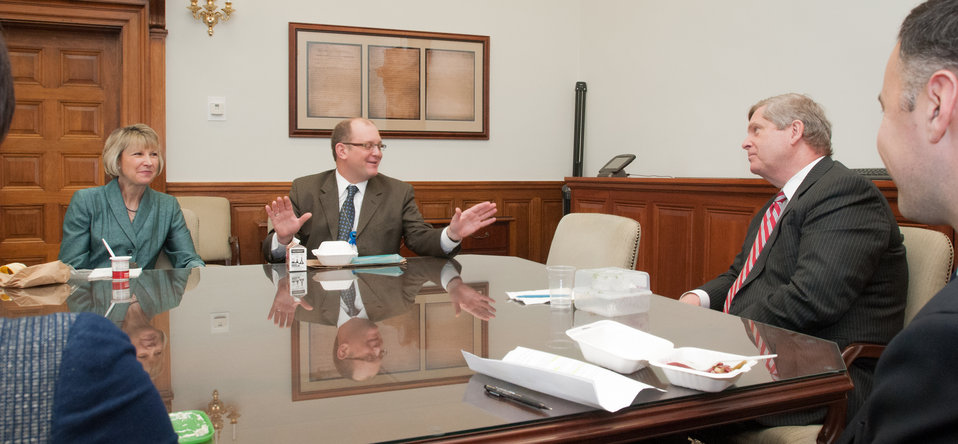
U.S. Department of Agriculture (USDA) Secretary Tom Vilsack, second from right, listens to Office of Ethics Branch Chief Ed Peterman, center, talk about growing up in a small town, while Food, Nutrition and Consumer Services (FNCS) Under Secretary Special Assistant Brenda Lis, second from left, Civil Rights Adjudicator Cinnamon Butler, left, Foreign Agricultural Service (FAS) Senior Advisor Patrick Kerrigan, right, also listen, during a Brown Bag Lunch that Secretary Vilsack periodically has with employees, in his conference room, on Tuesday, April 9, 2013, in Washington, D.C.